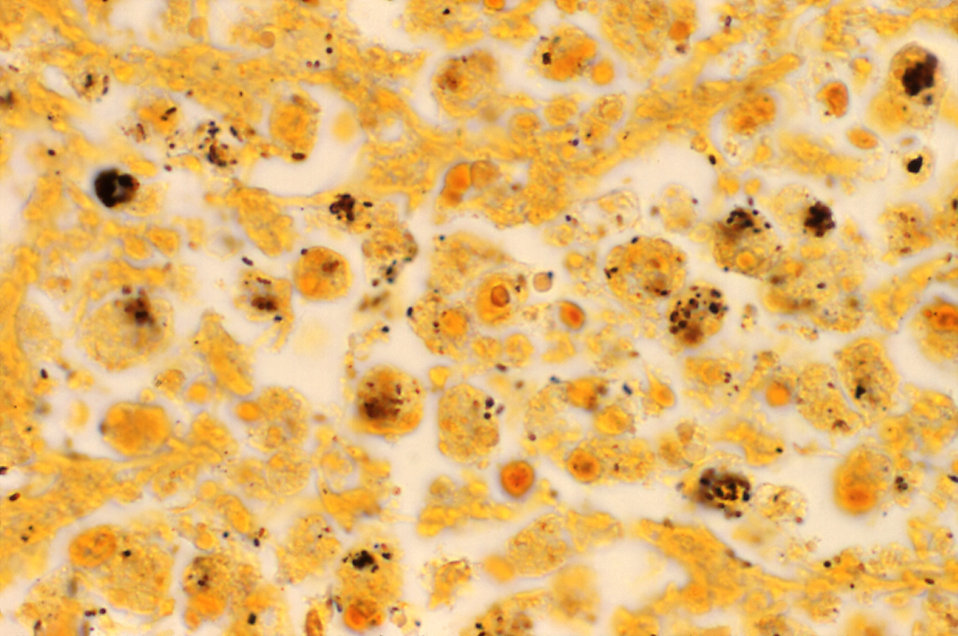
This light photomicrograph depicted cytoarchitectural details seen in a lung tissue specimen from a Knoxville patient with fatal pneumonia due to Legionnaires' disease. The tissue was stained using Dieterle's silver stain, which employs a silver-impregnation staining technique, the results of which reveals the presence of Legionella pneumophila bacteria.Legionellosis disease has two distinct forms:-Legionnaires' disease